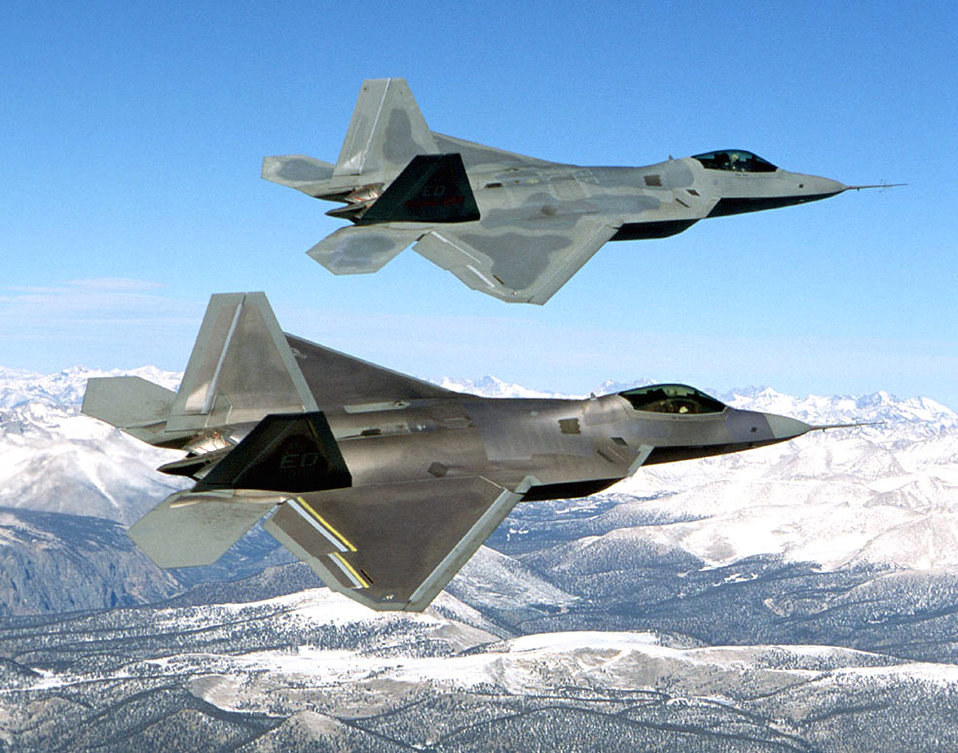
Raptor duo

FILE PHOTO -- The F/A-22 is an air-superiority fighter with improved capability over current Air Force aircraft. From the inception of the battle, the F/A-22's primary objective will be to establish air superiority through the conduct of counter air operations. The F/A-22 also has an inherent air-to-surface capability. A combination of improved sensor capability, improved situational awareness, and improved weapons provides first-kill opportunity against the threat.